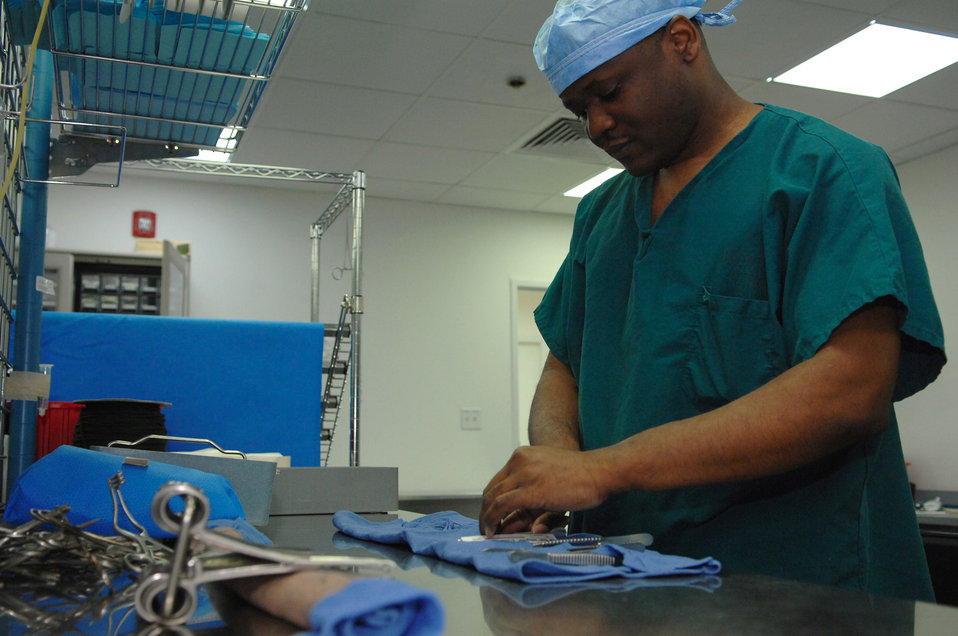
No germs allowed

Staff Sgt. Orondus Williams wraps up an Air Force Theater Hospital surgical kit before placing it in a sterilizer March 19 at Balad Air Base, Iraq. The 332nd Expeditionary Medical Group runs the Air Force Theater Hospital and provides a wide range of medical services to Airmen, Soldiers, Sailors and Marines throughout the Iraqi theater of operations. Sergeant Williams is a 332nd Expeditionary Medical Operations Squadron surgical technician deployed from Langley Air Force Base, Va.